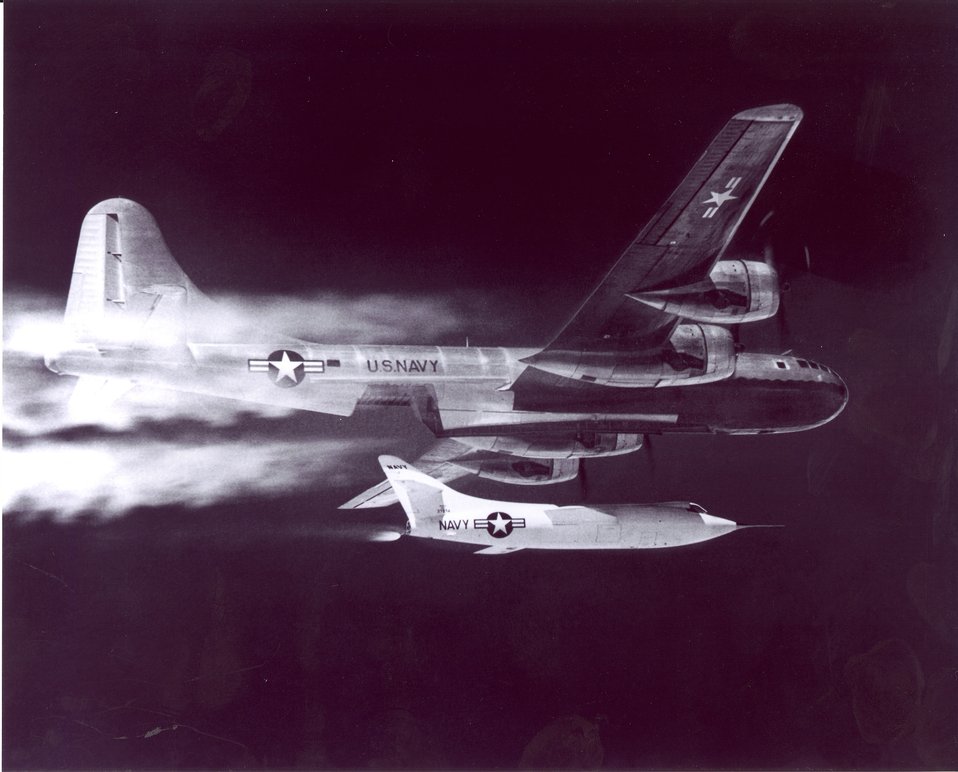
D-558-2 Skyrocket launch

The D-558-2 Skyrocket just after launch from a P2B-1S, the U.S. Navy version of the B-29 Superfortress.